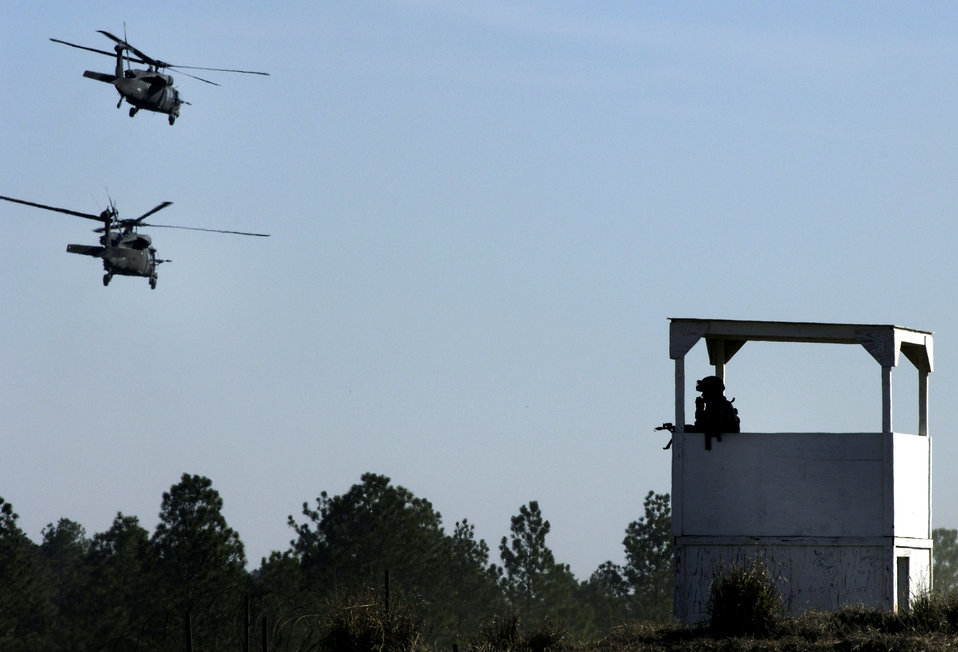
Air Warrior II

FORT POLK, La. (AFPN) -- Two UH-60 Black Hawk helicopters take off during an Air Warrior II exercise Feb. 9. Air Warrior II is a joint and total force exercise designed to give deploying units a realistic training environment.